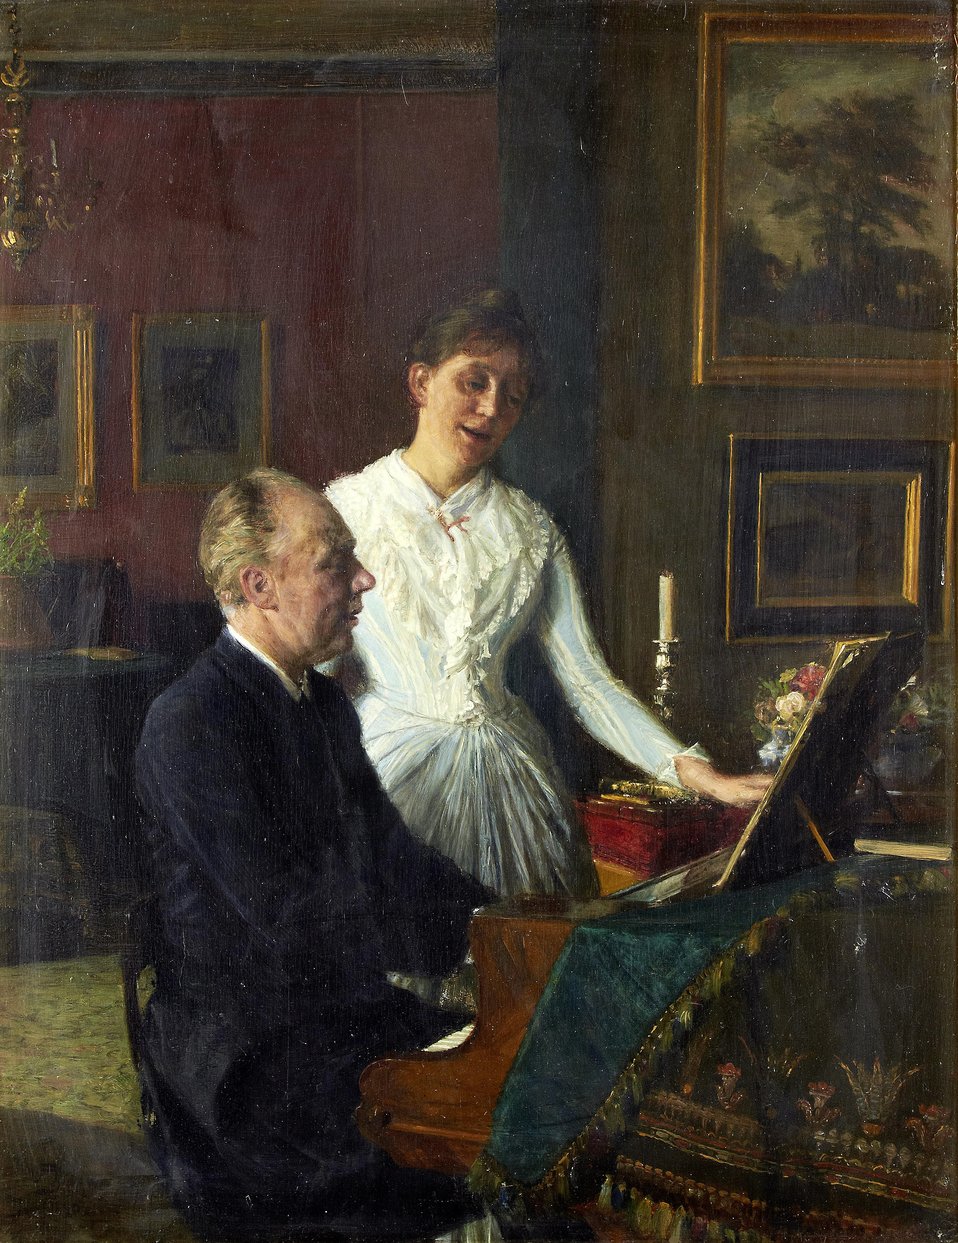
August Jerndorff - Actor Peter Jerndorff and his wife Amalie (1890)